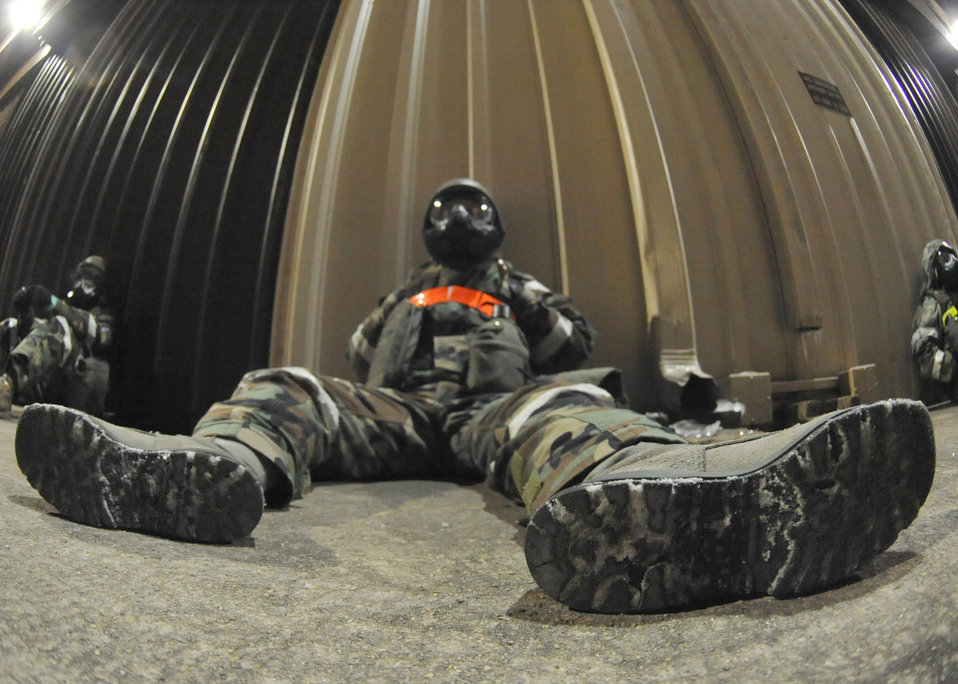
Beverly Bulldog 11-01

An Airman waits for a post-attack reconnaissance team Jan. 28, 2011, at Osan Air Base, South Korea, as part of Beverly Bulldog 11-01, an operational readiness exercise. The exercise allows Airmen to demonstrate their ability to complete the mission in simulated chemical environments while executing their primary duties, practicing self-aid and buddy care, and conducting post-attack reconnaissance and unexploded ordnance sweeps.